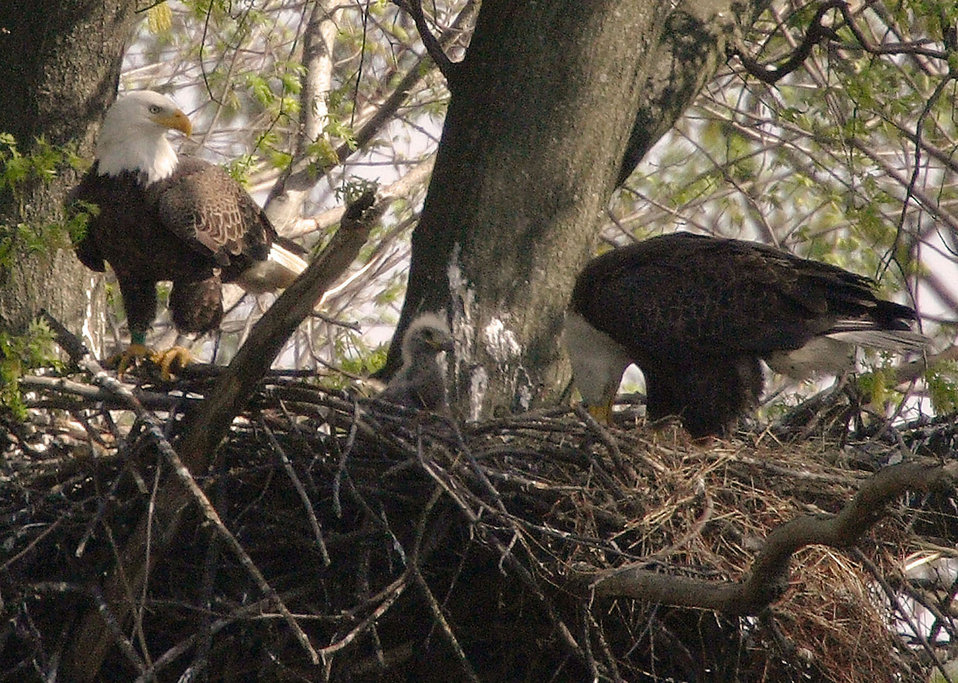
Bald Eagle Family

A bald eagle family at John Heinz National Wildlife Refuge in Philadelphia, Pennsylvania.